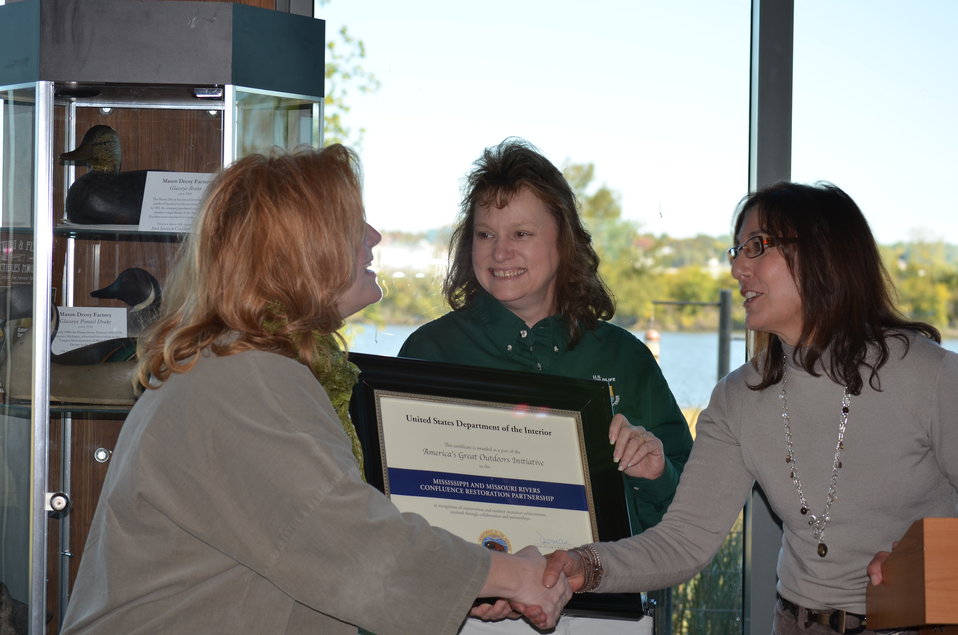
Audubon honored

Patty Hagen representing Audubon Missouri presented with award on behalf of Department of Interior. Hagen develops, participates in and supports programs to connect people to the beauty and significance of the confluence, to inspire conservation of the river's rich diversity in birds, wildlife and other natural resources, and to support healthy vibrant communities. USFWS/Ashley Spratt